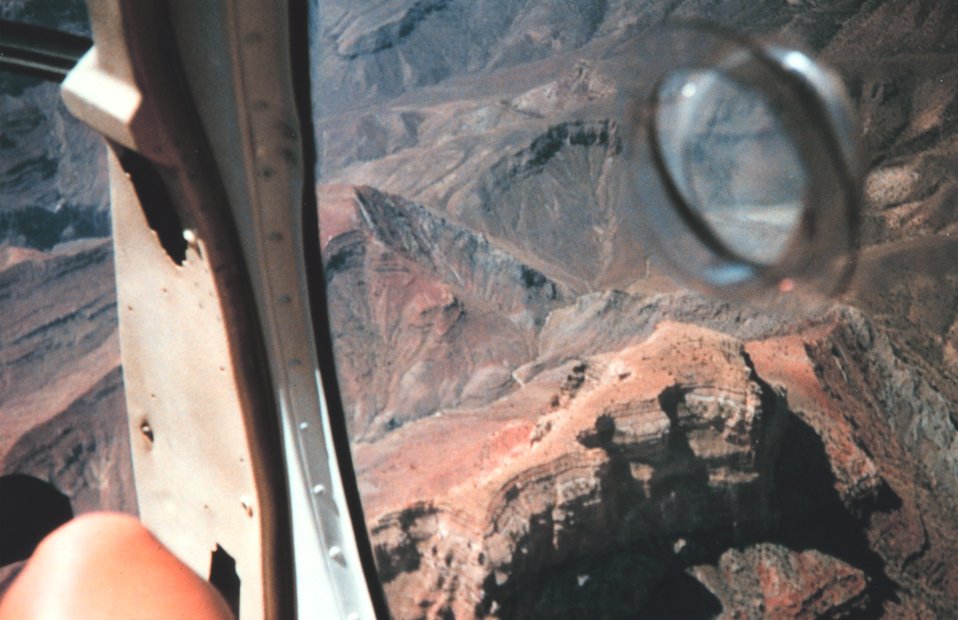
A helicopter eye's view of part of the Grand Canyon.